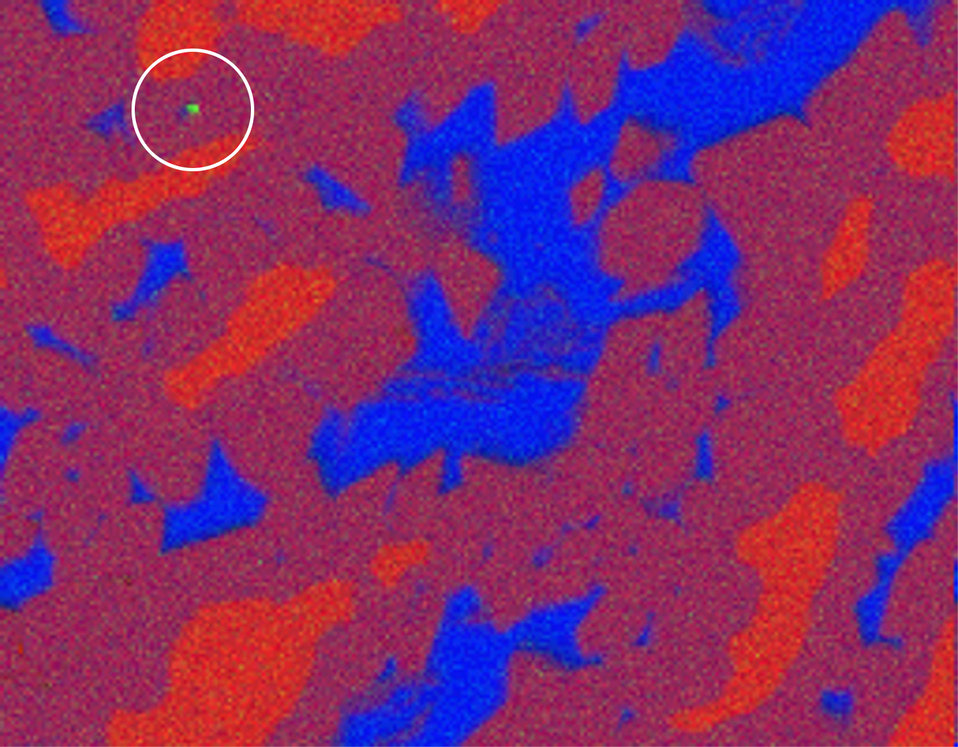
Chemical Analysis;Maximum Pixel Software

X-ray data collected with a scanning electron microscope from a nickel-aluminum alloy. Pure aluminum is represented by blue, pure nickel by red and nickel-aluminum alloys by colors in between. The green dot in the upper left shows a contaminant particle of chromium identified with the NIST software that occupied only one pixel of the microscope's scanning area. The sample measures about 160 micrometers across.